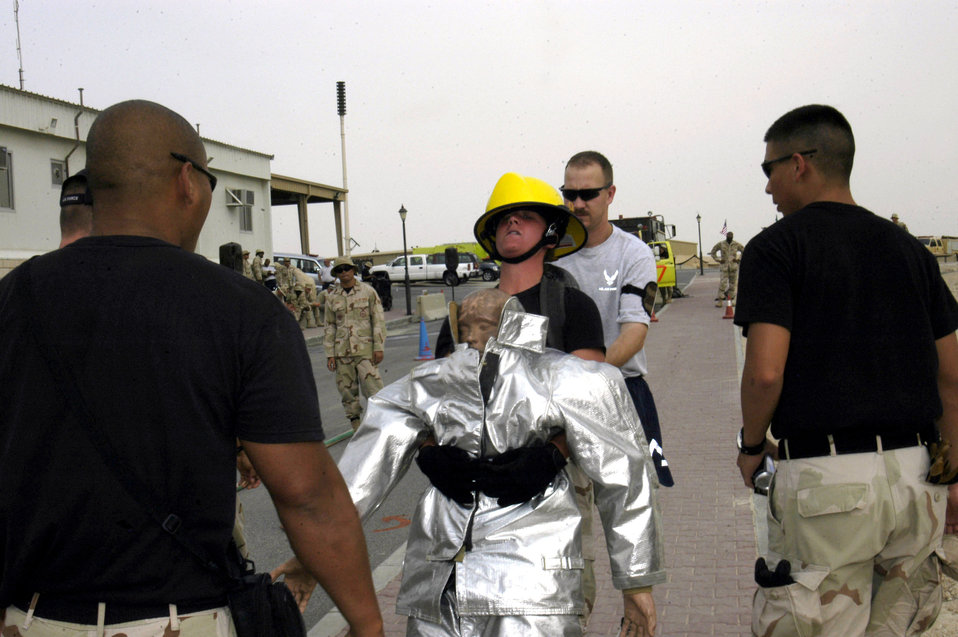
Firefighter Challenge

Airman 1st Class Michelle McCarty is encouraged to keep moving as she pulls a 135-pound dummy 100 feet at the Firefighter Challenge in Southwest Asia on Thursday, May 4, 2006. More than 36 Airmen, Marines and Soldiers participated in the event, which was hosted by the 386th Air Expeditionary Wing fire and emergency services flight. Individual and team events included climbing a 40-foot tower to hoist a 40-pound hose and pulling a hose 75 feet, which when extended weighs more than 270 pounds. Airman McCarty is assigned to the 386th Security Forces Squadron force protection flight.